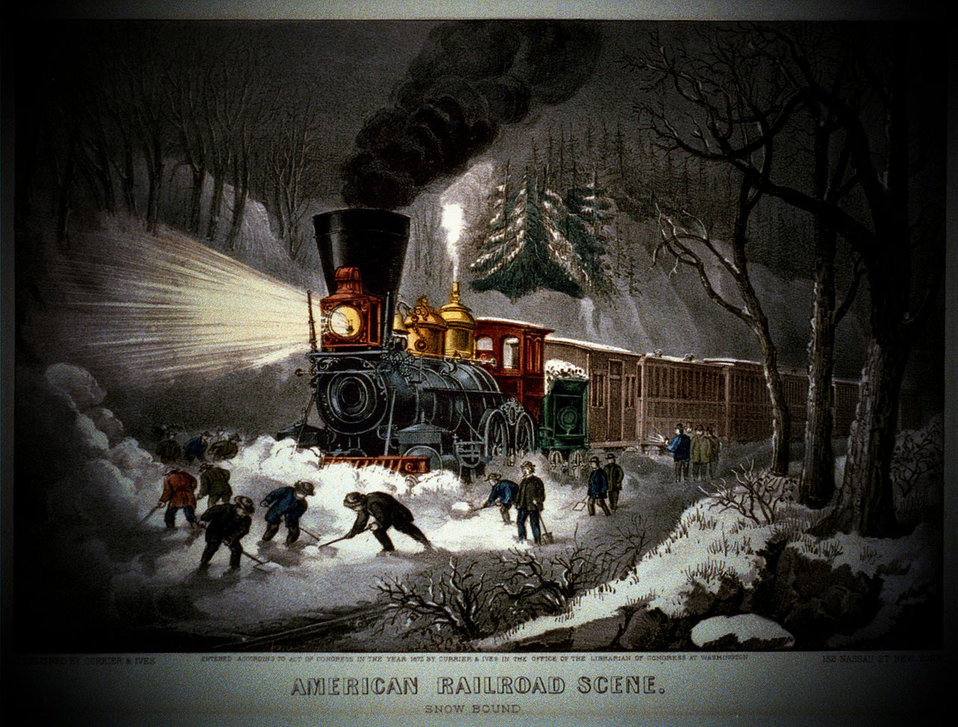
American railroad scene

Depicting a snow bound train on a railroad in america c1890.